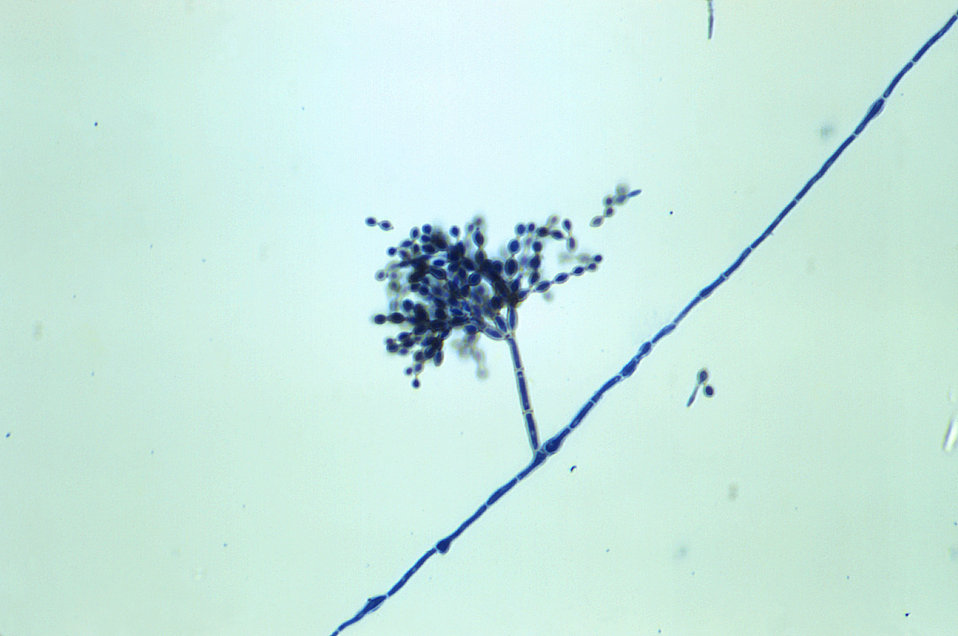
Magnified 400X, this photomicrograph revealed some of the ultrastructural morphology displayed by a cluster of Cladosporium herbarum conidia.